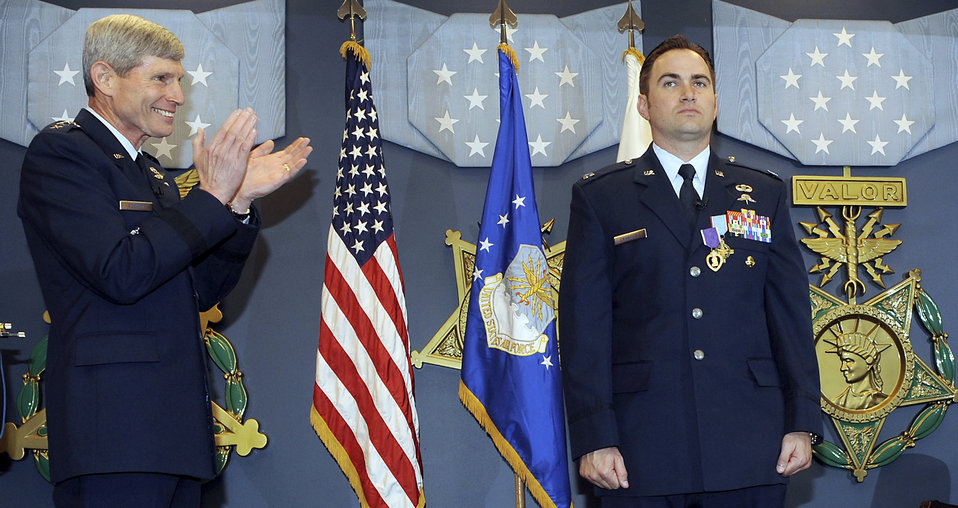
Air Force Cross ceremony

Air Force Chief of Staff Gen. Norton Schwartz congratulates Capt. Barry Crawford after presenting him with the Air Force Cross and Purple Heart during a ceremony in the Pentagon's Hall of Heroes in Washington, D.C., on April 12, 2012.